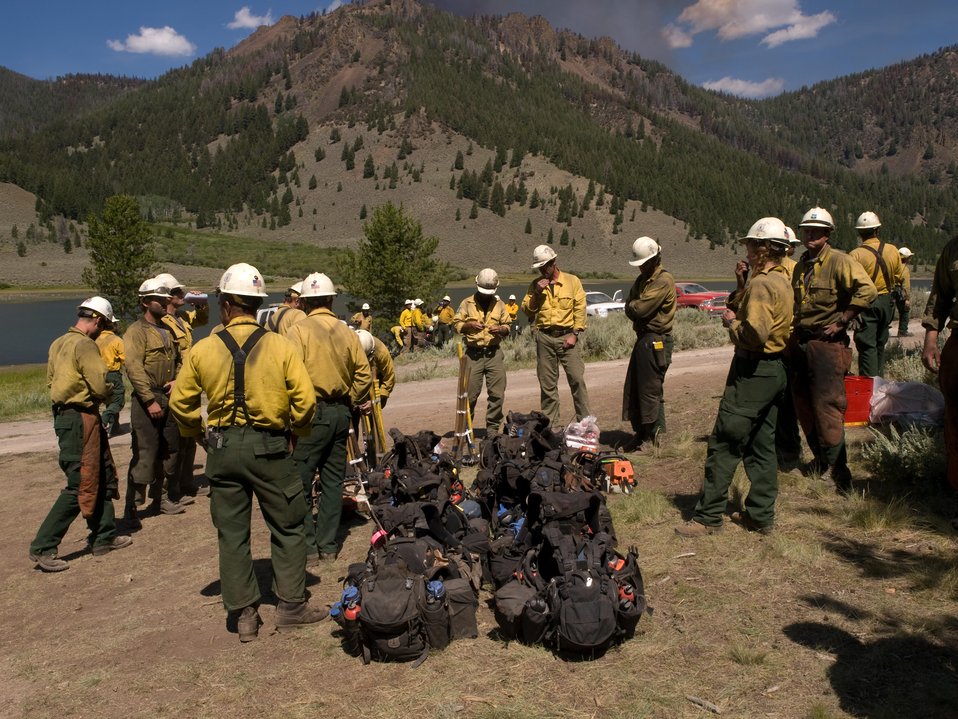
Firefighters are briefed before going to fire line of the Lodgepole Fire on Jul. 28, 2013. The Lodgepole Fire in the Salmon-Challis National Forest near Challis, ID began on Jul. 20, 2013 by lightning has consumed approximately 20,080 acres and is approximately 15% contained.